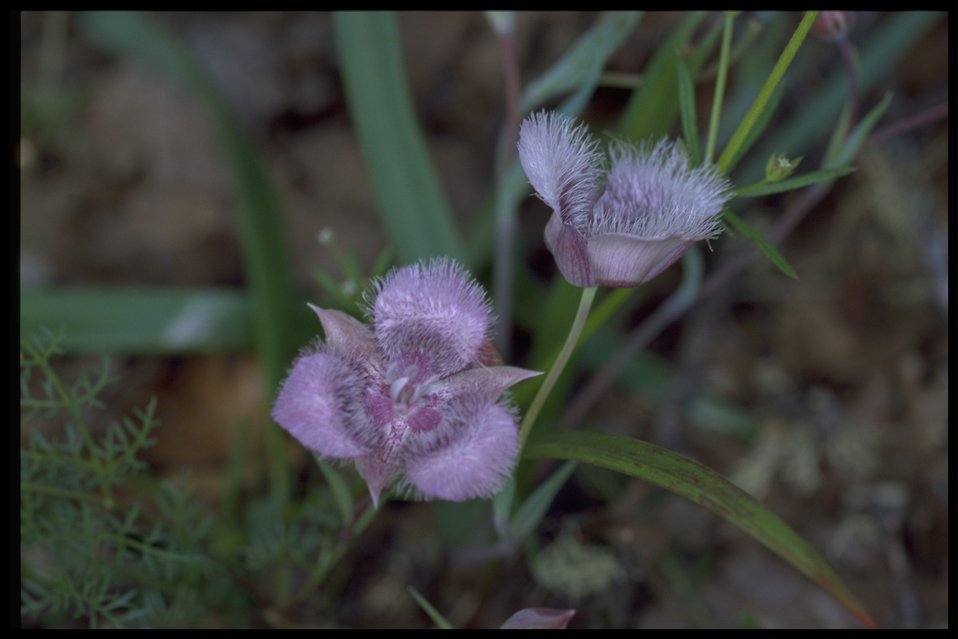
Medium shot of Calochortus tolmiei.